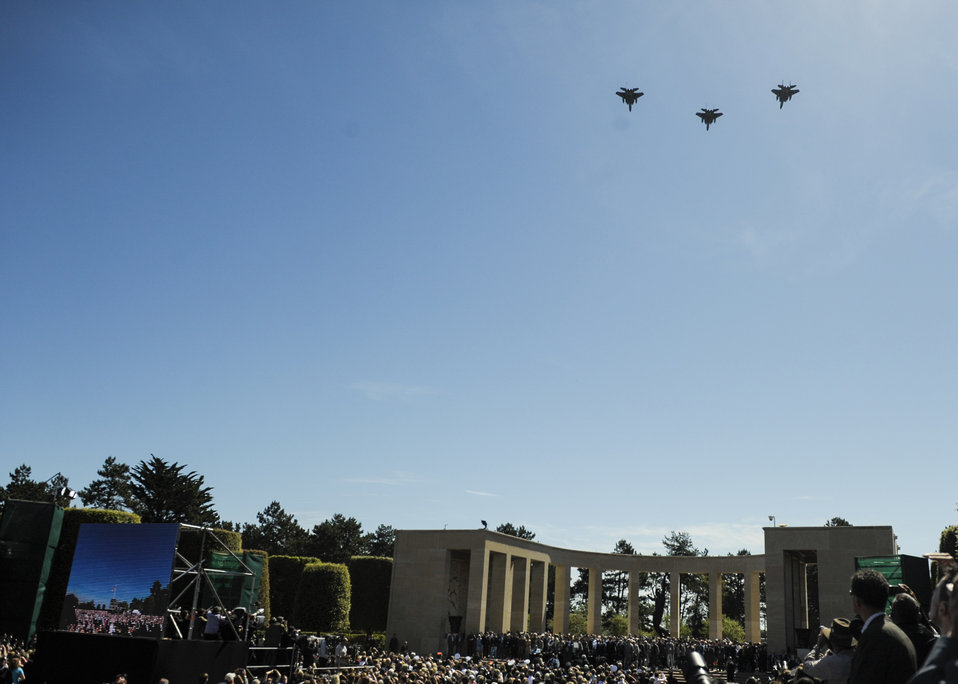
F-15 Eagles Do a Flyover During 70th D-Day Anniversary Commemoration

The skies roar as F-15 Eagles from the 48th Fighter Wing, RAF Lakenheath, do a flyover during the D-Day commemoration ceremony held to honor WWII veterans at the Normandy American Cemetery on June 6, 2014. The event was one of several commemorations of the 70th Anniversary of D-Day operations conducted by Allied forces during World War II June 5-6, 1944.